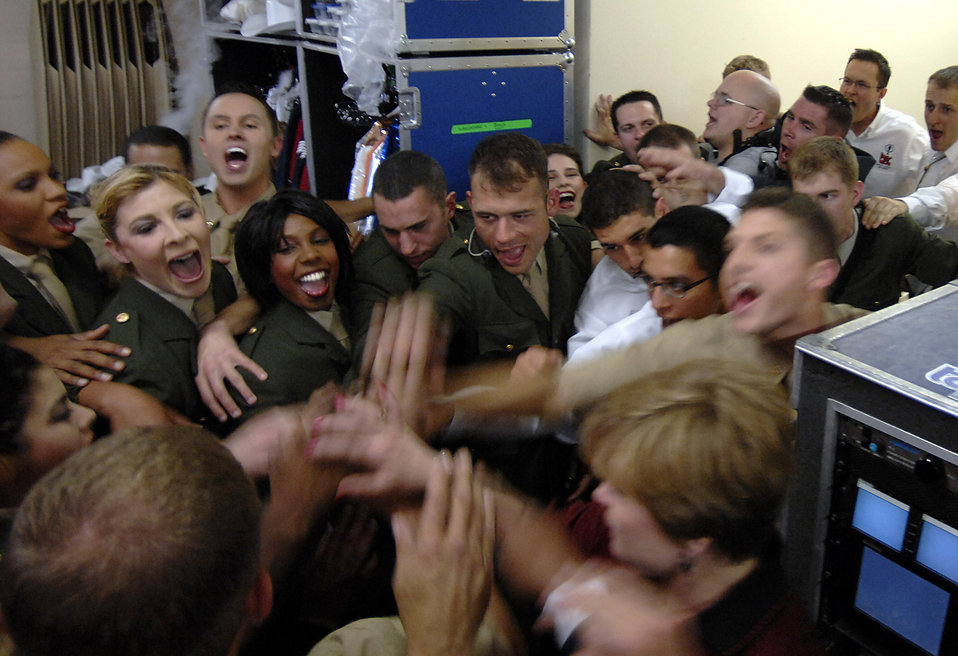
Tops in Blue entertains at Air Force Week

Tops in Blue Airmen give a cheer moments before their performance as part of Air Force Week June 5 at the Radisson Hotel Sacramento, Calif. Tops in Blue is the Air Force's premier entertainment group that performs for audiences around the globe.